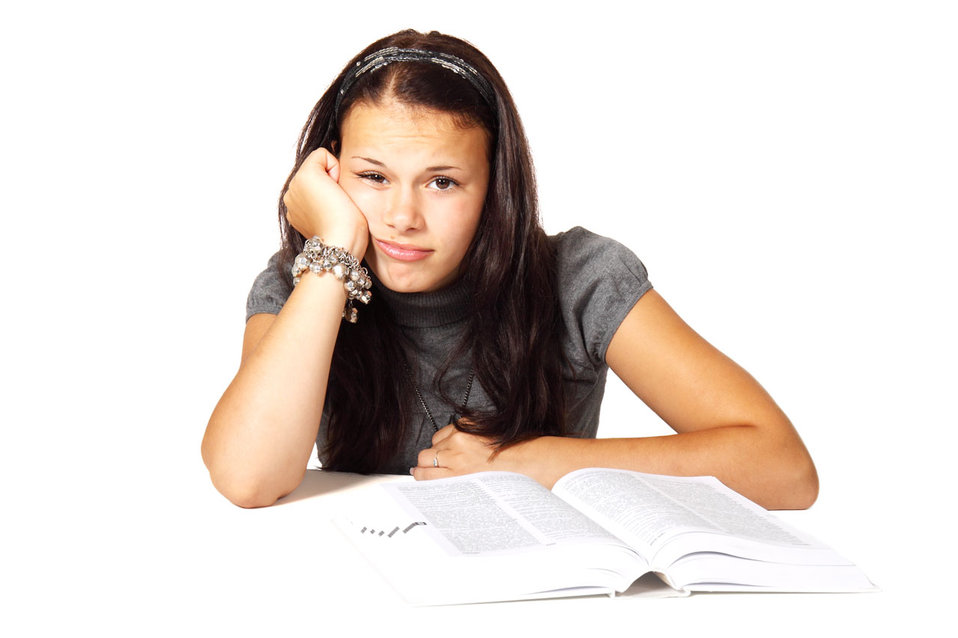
Bored woman studying

Bored young woman studying.